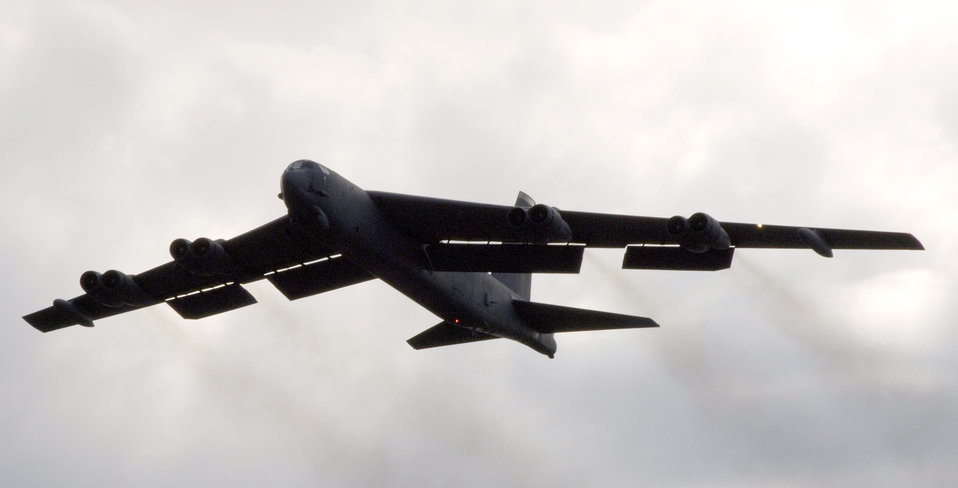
Stratofortress mission

BARKSDALE AIR FORCE BASE, La. (AFPN) -- A B-52H Stratofortess from the 93rd Bomb Squadron takes off here Feb. 4.